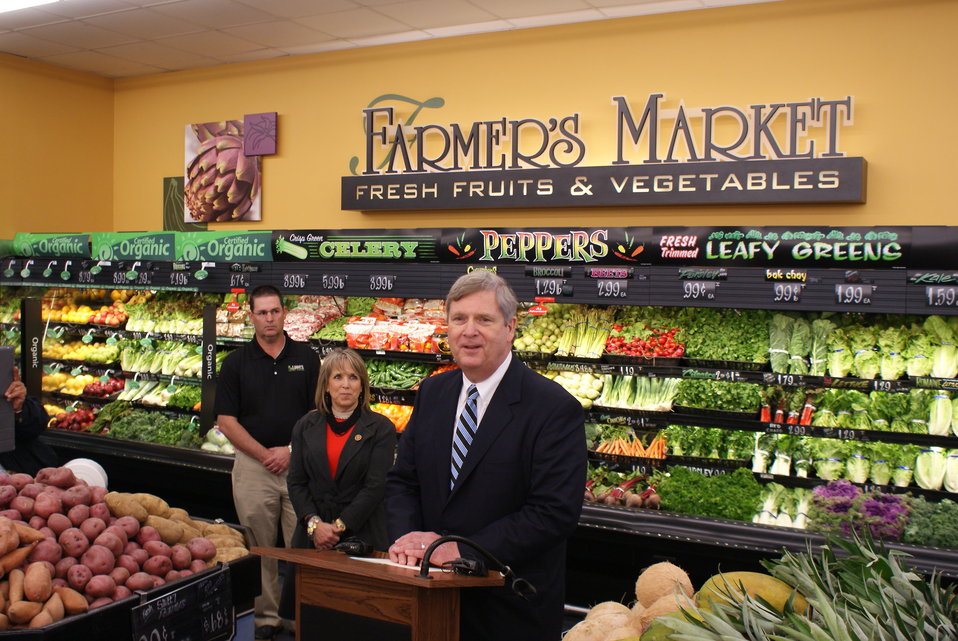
Agriculture Secretary Tom Vilsack speaks at Lowe's Corner Market in Albuquerque, NM on Mar. 10, 2014. Secretary Vilsack highlighted the U.S. Department of Agriculture’s (USDA) efforts to expand access to healthy food and how the 2014 Agricultural Act will expand access to healthy foods, particularly in under-served communities. Congresswoman Lujan-Grisham (NM) and customer Roger Lowe stand in background.